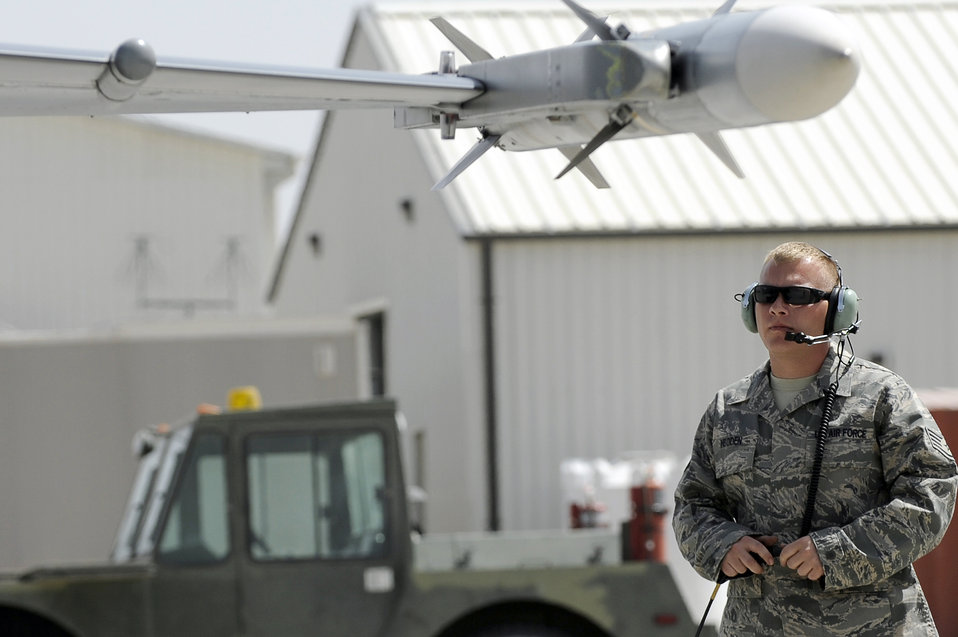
30 Code 1 flights

Staff Sgt. Lucas Inboden, a crew chief from the 34th Expeditionary Fighter Squadron at Bagram Airfield, Afghanistan, recovers an F-16 Fighting Falcon March 23, 2010, after it completed its 30th code 1 flight, meaning no maintenance write-ups for 30 flights in a row. Sergeant Inboden is deployed from Hill Air Force Base, Utah.